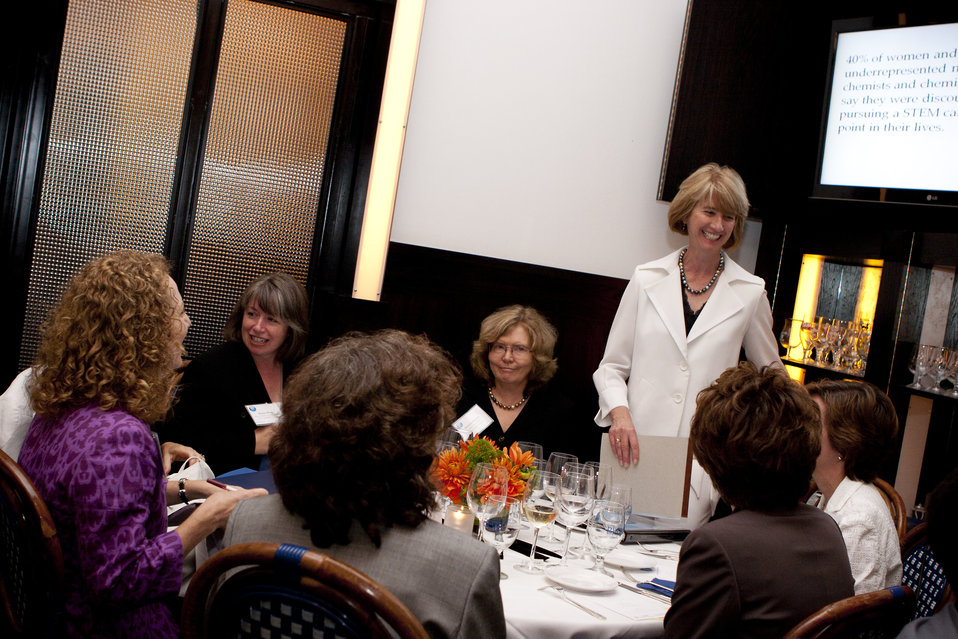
WomenandEnergy 42